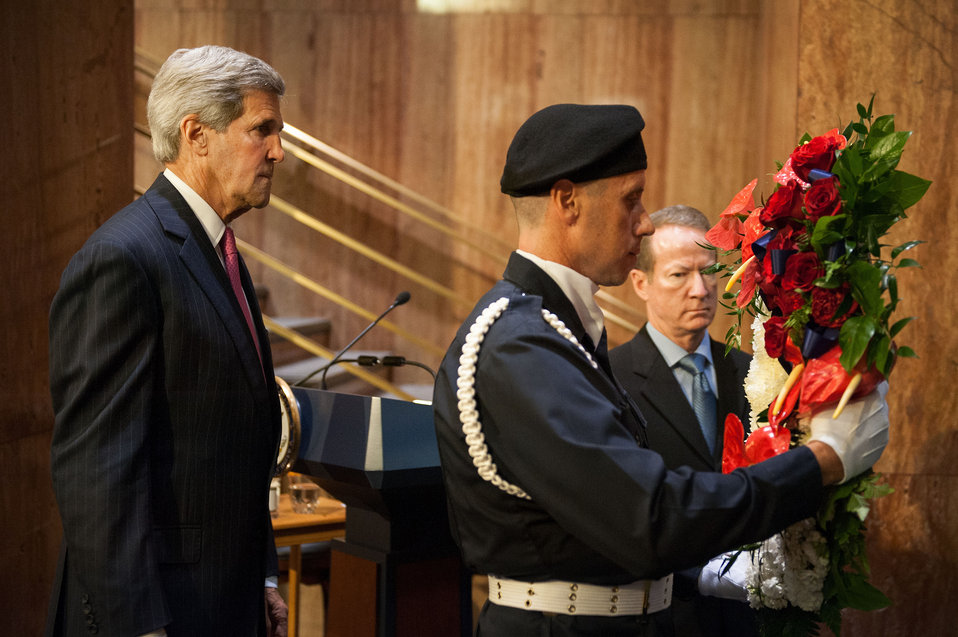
Secretary Kerry Participates in the Dedication of the Bureau of International Narcotics and Law Enforcement Affairs Memorial Wall Ceremony

With Assistant Secretary of State for International Narcotics and Law Enforcement Affairs William R. Brownfield, U.S. Secretary of State John Kerry participates in the dedication of the Bureau of International Narcotics and Law Enforcement Affairs memorial wall ceremony at the U.S. Department of State in Washington, D.C., on June 12, 2014. The memorial honors personnel who have died while participating in overseas criminal justice and counternarcotics assistance programs on behalf of the United States.